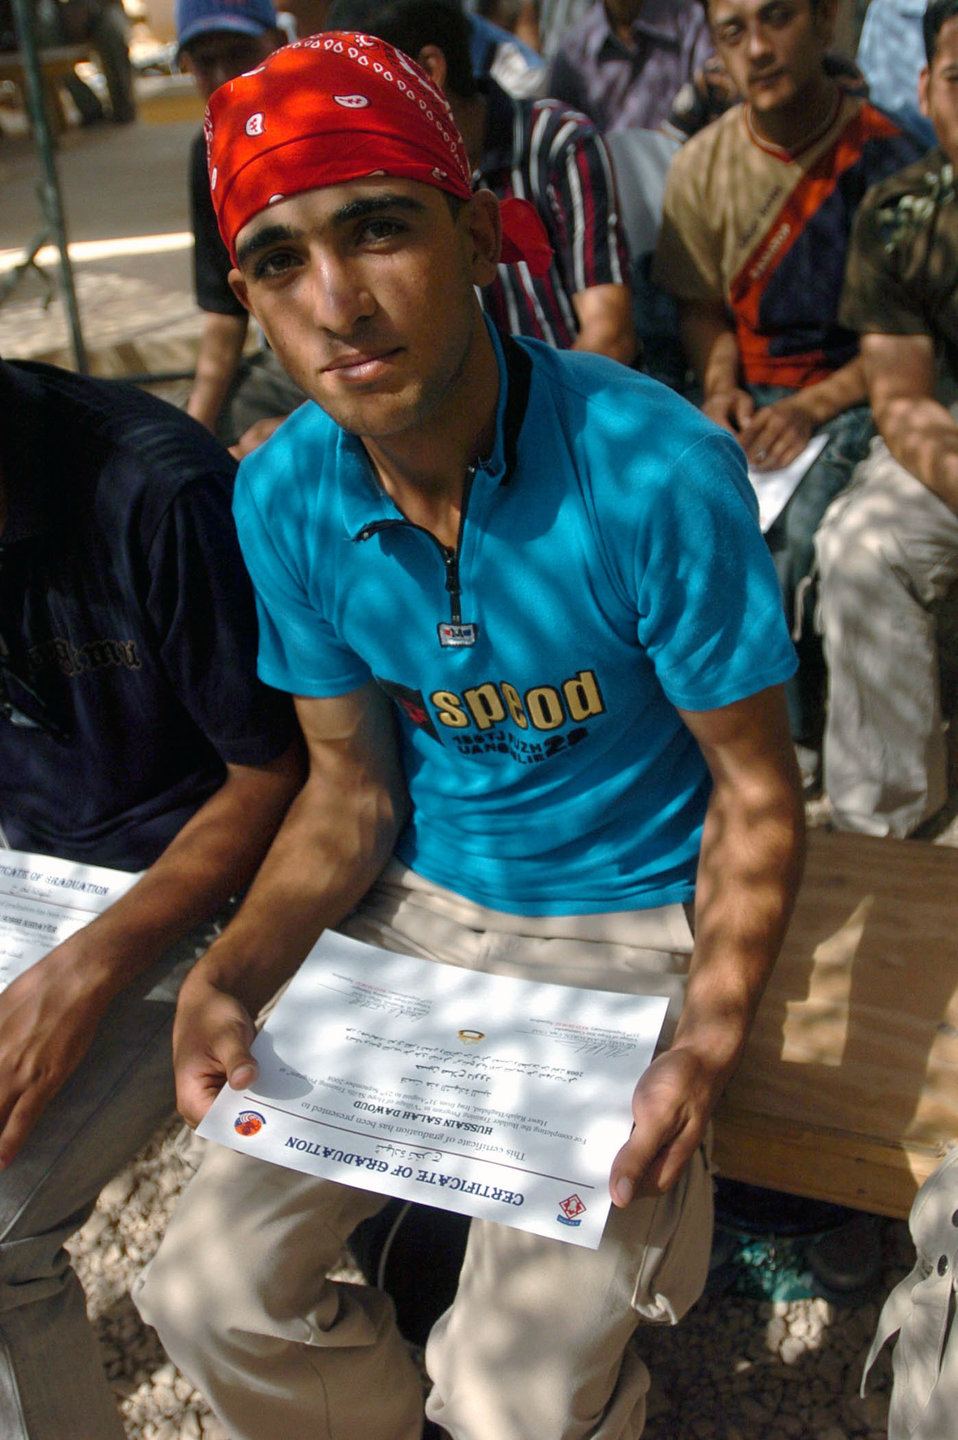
Village of Hope Training Center graduates final class

A student sits with his certificate after graduating from the fourth and final class at the Village of Hope training center at Patrol Base Stone, Iraq, Sept. 25.